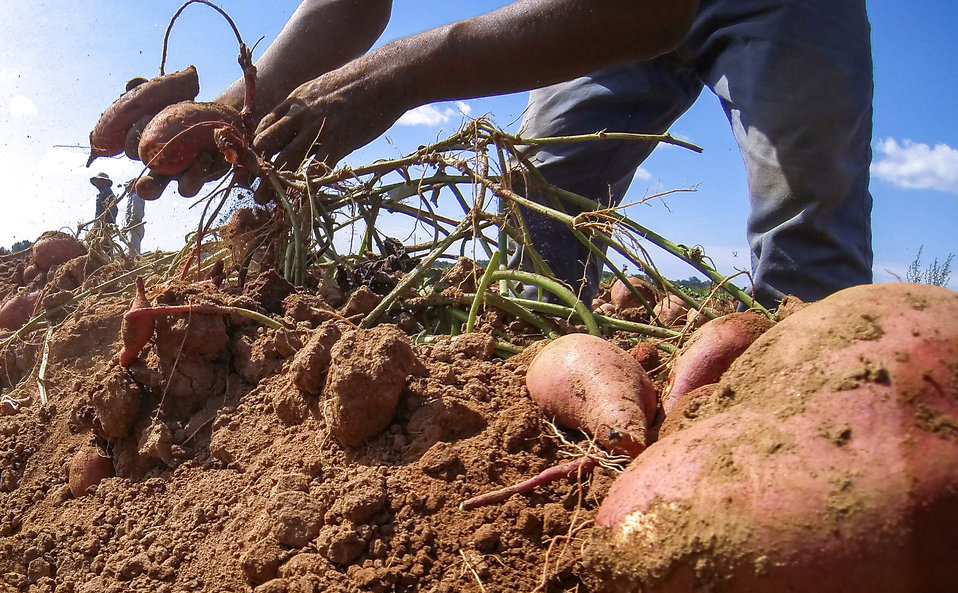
Migrant workers pick, separate, and process sweet potatoes at Kirby Farms in Mechanicsville, VA on Friday, Sept. 20, 2013. 200 acres of the farm are devoted to eggplant, spinach, beets, tomato, jalapeno peppers, melons and a variety of greens. Soybeans and small grain are grown on the remaining 300 acres. Using rotational crop practices allows Kirby Farms to double and triple crop yields. Wholesalers, who buy from this farm, sell the produce to major supermarkets in the Mid-Atlantic region, from North Carolina to Maryland. Restaurants in the local area prepare and serve the local bought produce to patrons in the Richmond, VA metropolitan area.